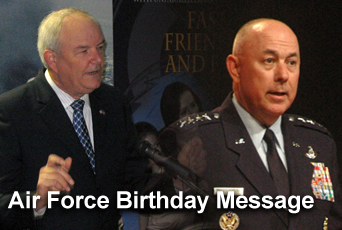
Secretary Wynne and General Moseley

Air Force Secretary Michael W. Wynne and Air Force Chief of Staff Gen. T. Michael Moseley send their birthday message to the force.